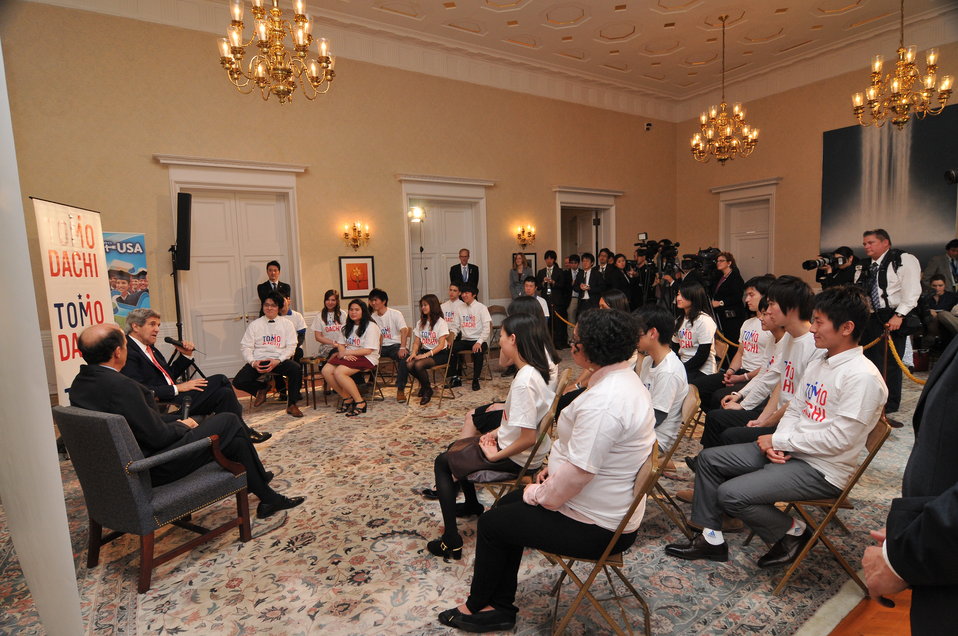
Secretary Kerry and Ambassador Roos Take Questions from Students

U.S. Secretary of State John Kerry and Ambassador Roos take questions from students participating in TOMODACHI Initiative programs at a youth outreach event at the U.S. Ambassador’s residence in Tokyo, Japan, on April 14, 2013.